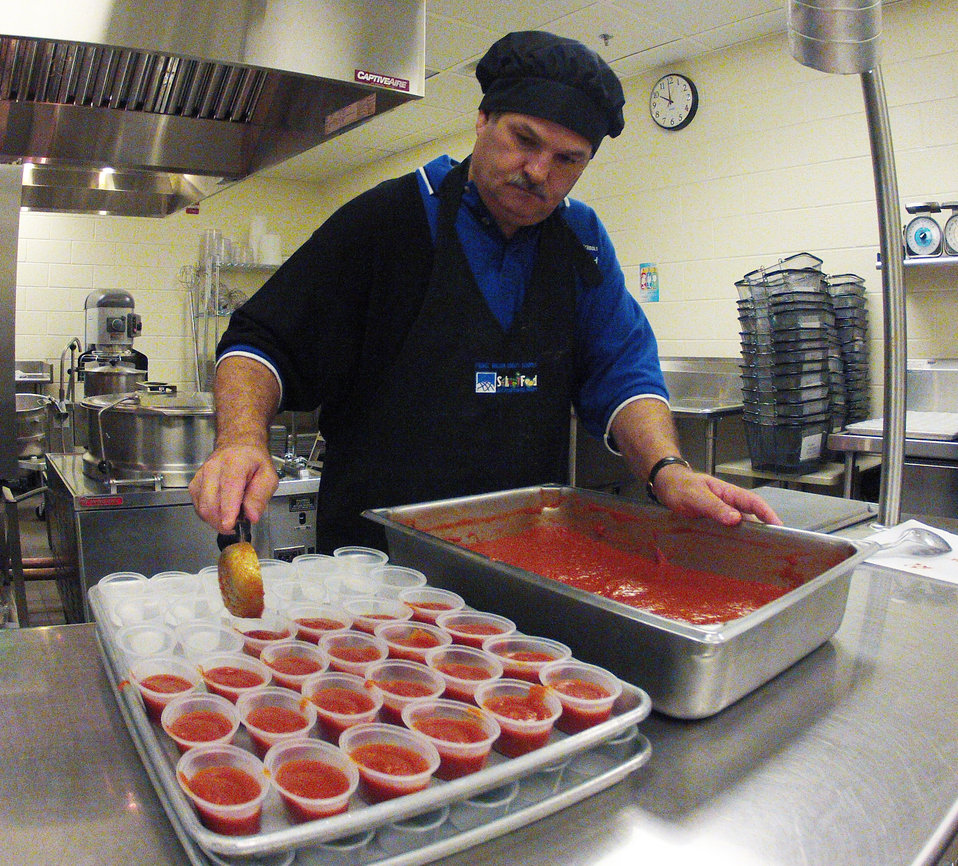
School lunch staff and students enjoy the new school lunch menu created to meet the new standards at the Yorkshire Elementary School in Manassas, VA on Friday, Sept. 7, 2012.